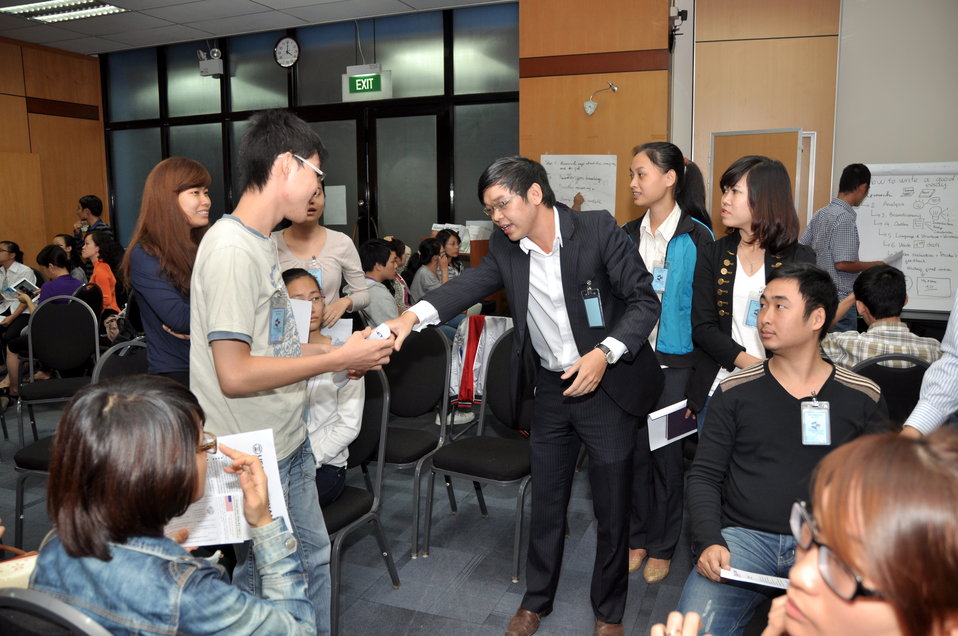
Students join the ‘USAID and Higher Education in Vietnam’ talk

Photo: @USAIDVietnam, November 19, 2012